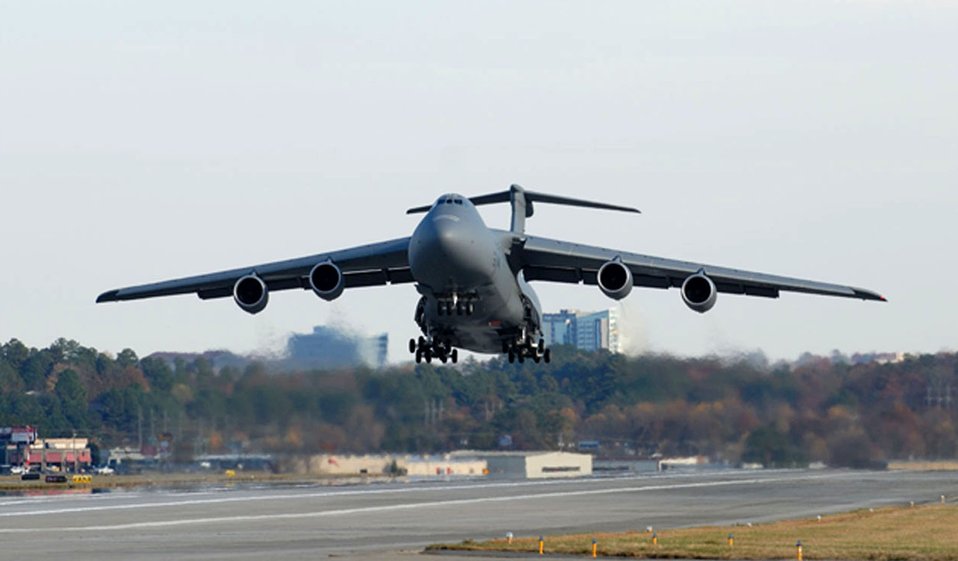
Second C-5M Super Galaxy takes flight

The second fully modernized Lockheed Martin C-5M Super Galaxy test aircraft makes its first flight Nov. 17 from Dobbins Air Reserve Base, Ga.